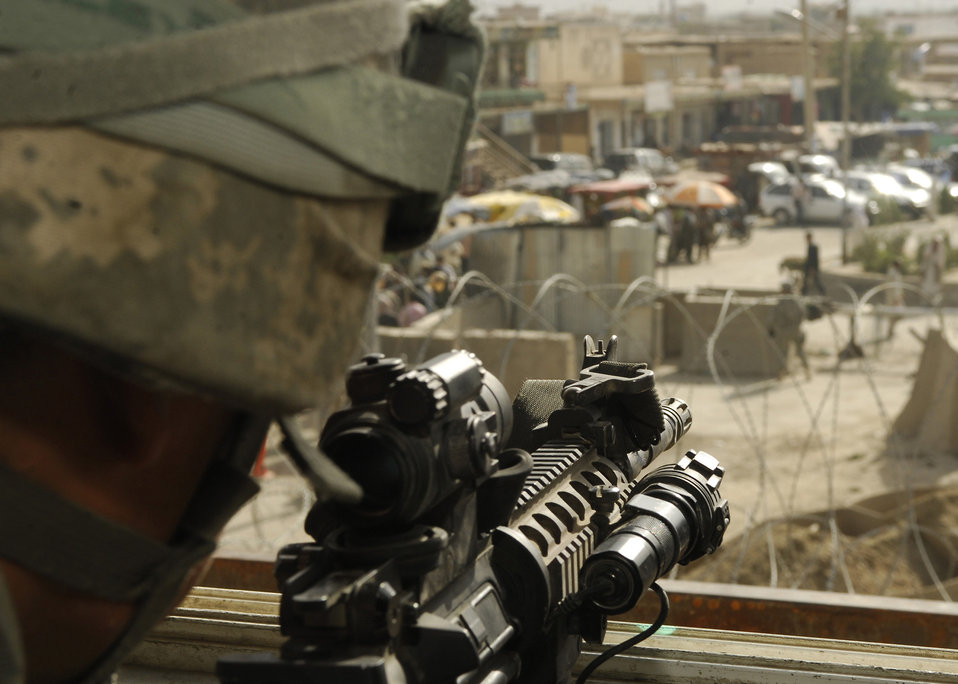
Lock and load

Staff Sgt. Steven Lugo-Velez can see much of the town from his overwatch tower surrounding Bagram Airfield, Afghanistan. Sergeant Lugo-Velez is in the 455th Expeditionary Security Forces Squadron, originally from New York City, and is currently stationed at Edwards Air Force Base, Calif.